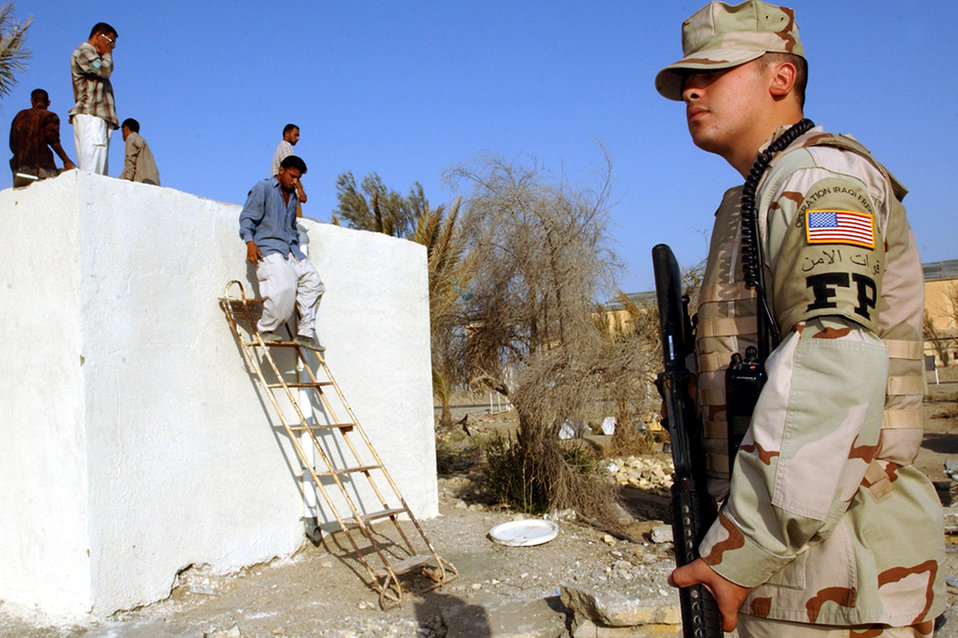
Renovations

TALLIL AIR BASE, Iraq -- Senior Airman Matthew Diaz watches local-national workers while they renovate a building here. Airman Diaz is one of about 50 Airmen deployed here to serve as an escort for the 407th Expeditionary Civil Engineer Squadron's force protection flight.